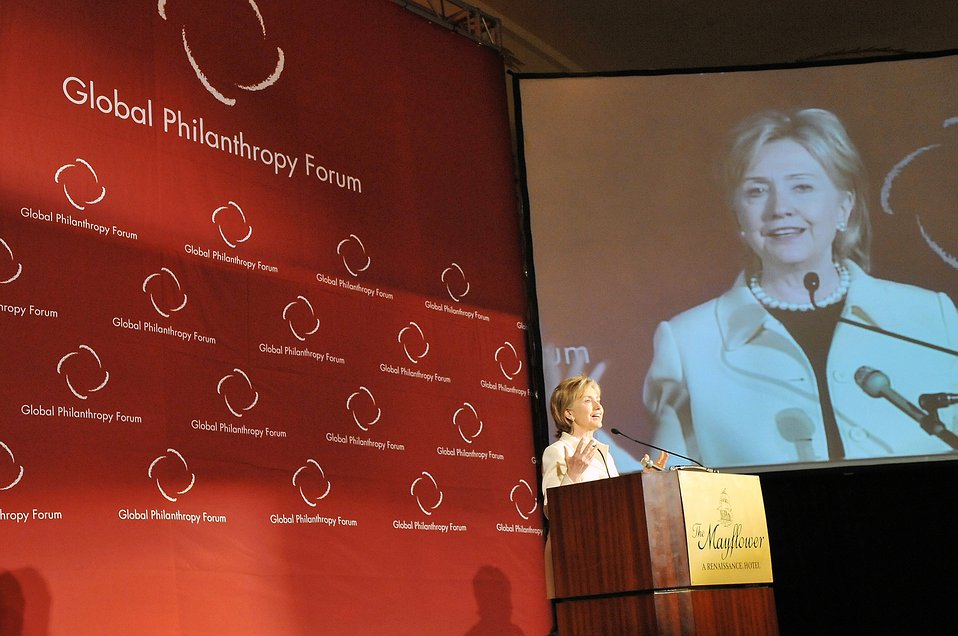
Global Philanthropy Forum Conference

U.S. Secretary of State Hillary Rodham Clinton provides remarks at the Global Philanthropy Forum Conference in Washinton, DC April 22, 2009.